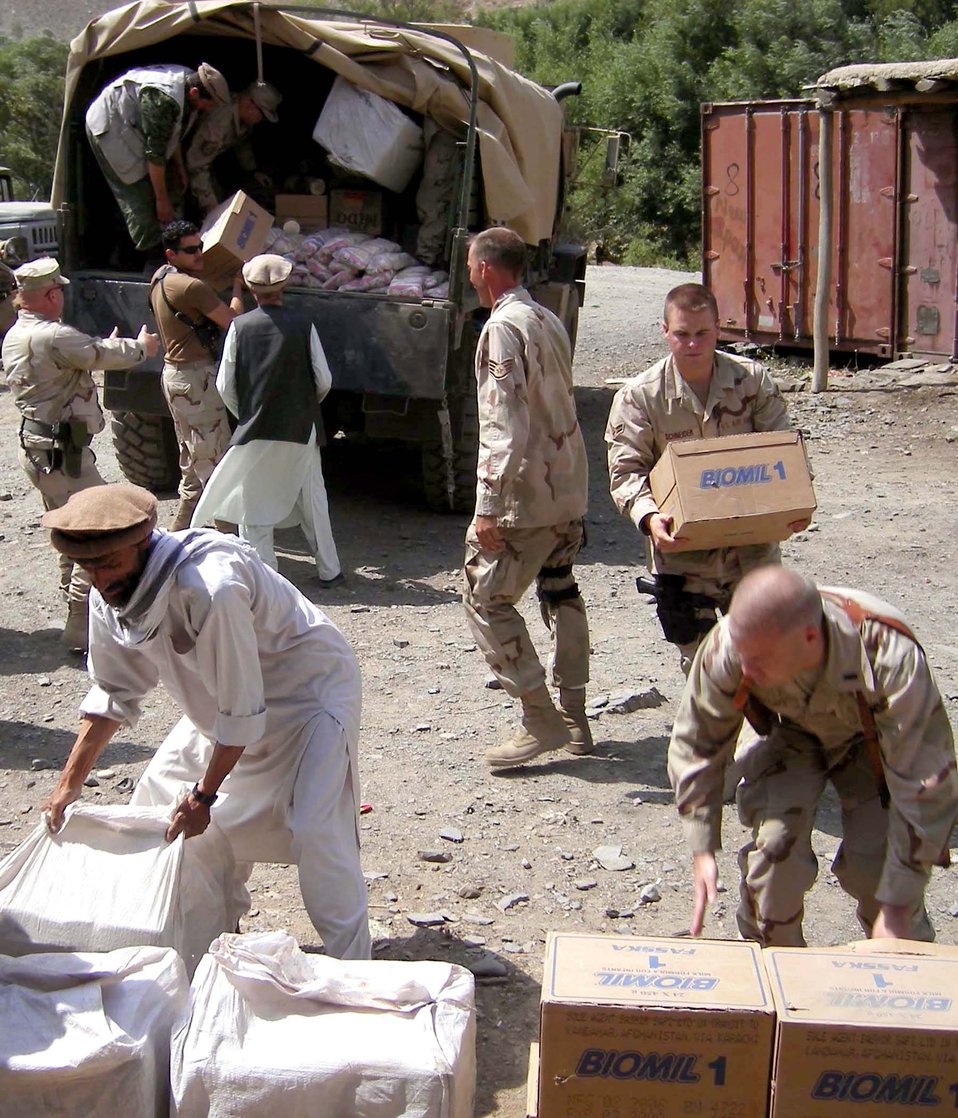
Humanitarian assistance

Members of the Panjshir Provincial Reconstruction Team and volunteers unload a 5-ton truckload of humanitarian assistance food supplies near Abdara, Afghanistan, on July 30. More than 180 Afghan locals are building a road by hand to connect three villages to the main road across the Panjshir River. Governor Haji Bahlol requested assistance for workers who are unable to provide for their families while building the road. The PRT also plans to provide tool kits consisting of shovels, picks, hammers and other hand tools to assist with the project.